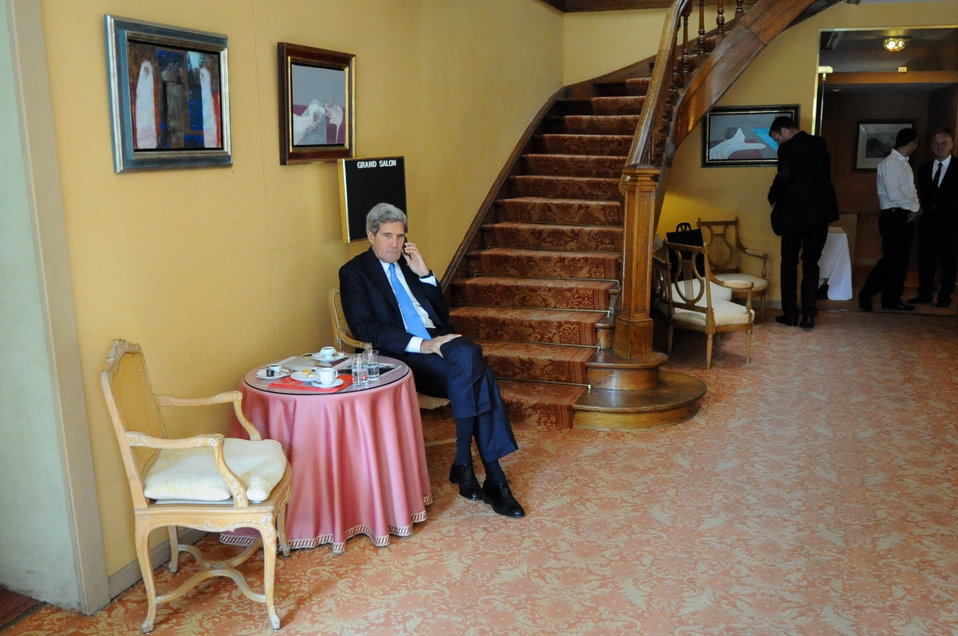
Secretary Kerry Speaks with National Security Advisor Rice

3:27 p.m., September 12, 2013 - U.S. Secretary of State John Kerry speaks on the phone with National Security Advisor Susan Rice during a break in a working lunch with members of his senior staff focused on upcoming negotiations with Russian officials about eliminating Syrian chemical weapons.